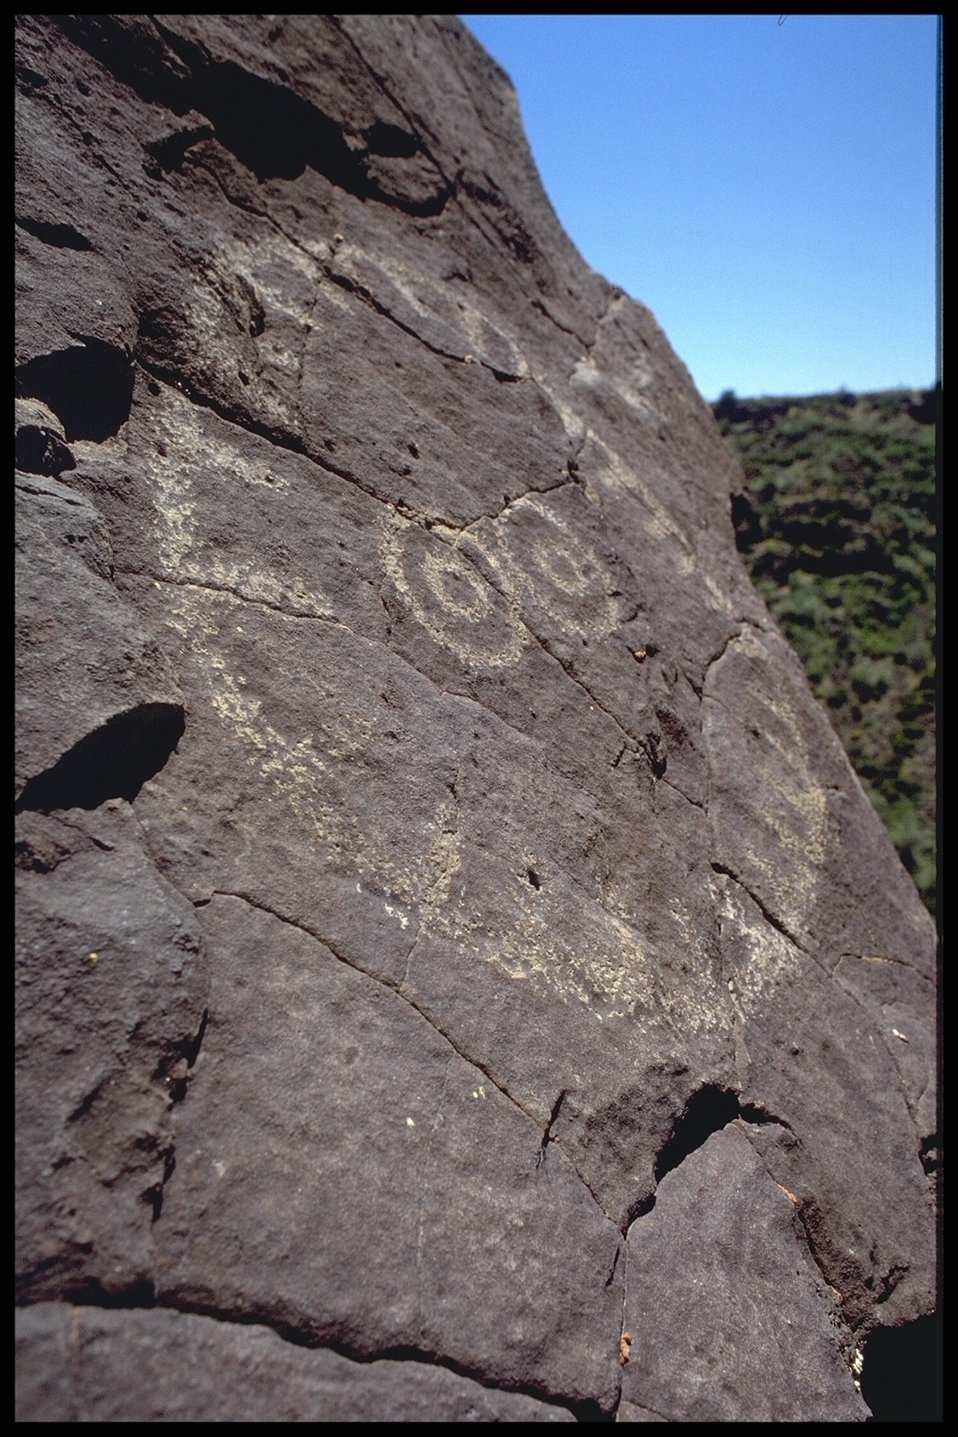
Petroglphs (Rock Art) can be found throughout the 71,000 Acres that make up the Agua Fria National Monument.